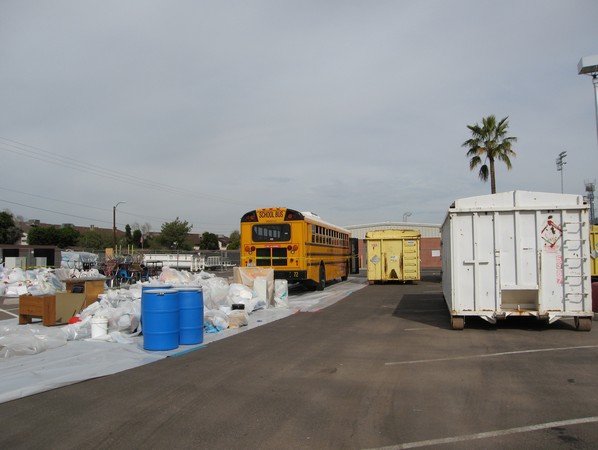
Items waiting to be decontaminated

After a mercury spill at an Arizona high school, these items were screened for mercury. Mercury levels were low enough that decontaminated items were salvaged for future use.